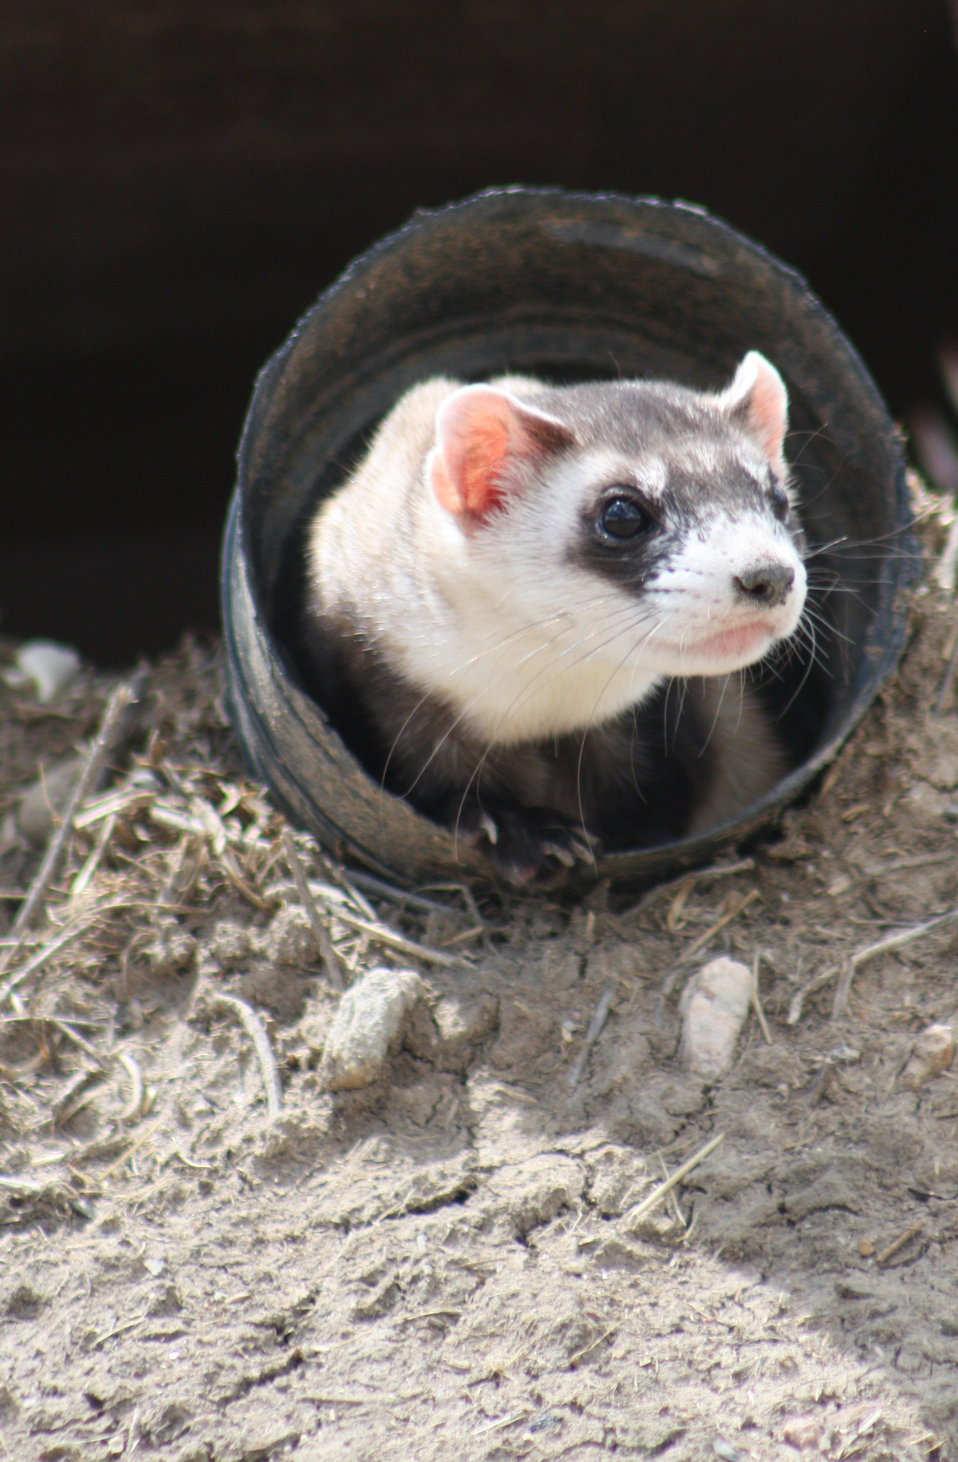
Interns visit the NBFFCC

In the summer of 2012, USFWS Region 6 interns visited the National Black-footed Ferret Conservation Center (NBFFCC) in Colorado to learn how the program reintroduces the endangered Black-footed ferret back into its native habitat.